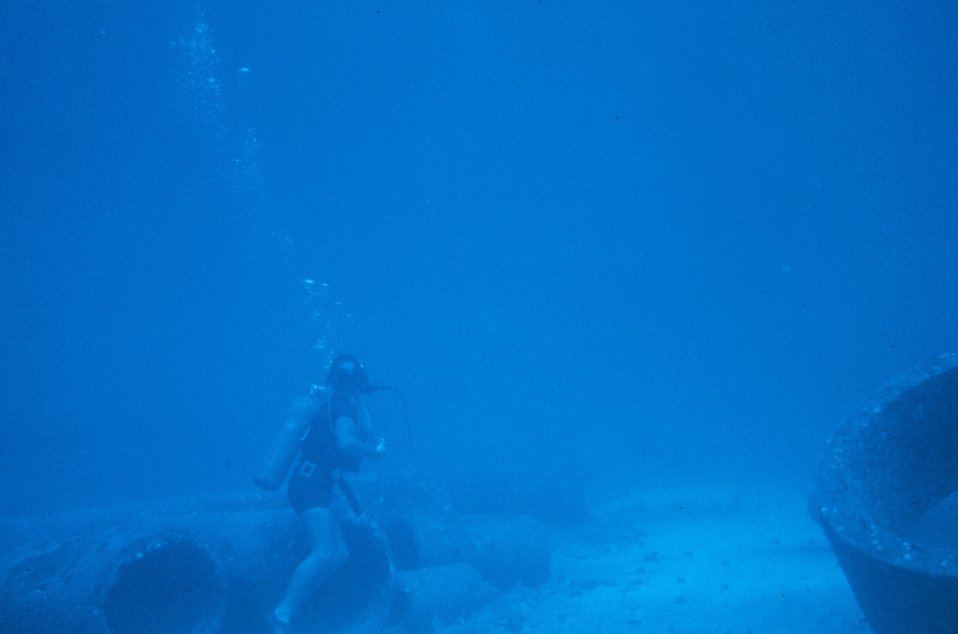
Underwater tape recorders were used to record the number and size of each fish species on a set transect. A conversion table was used to convert estimated length of fish to estimated weight.